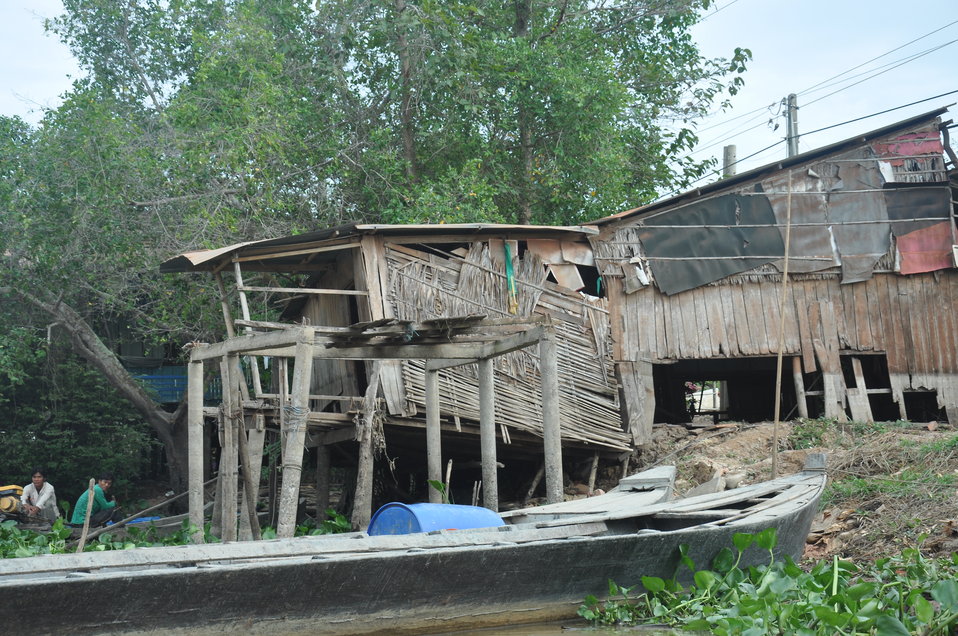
USAID supplies assistance to flood-stricken Long An Province, Tan Thanh District

USAID site visit to Long An Province to visit flood relief beneficiaries